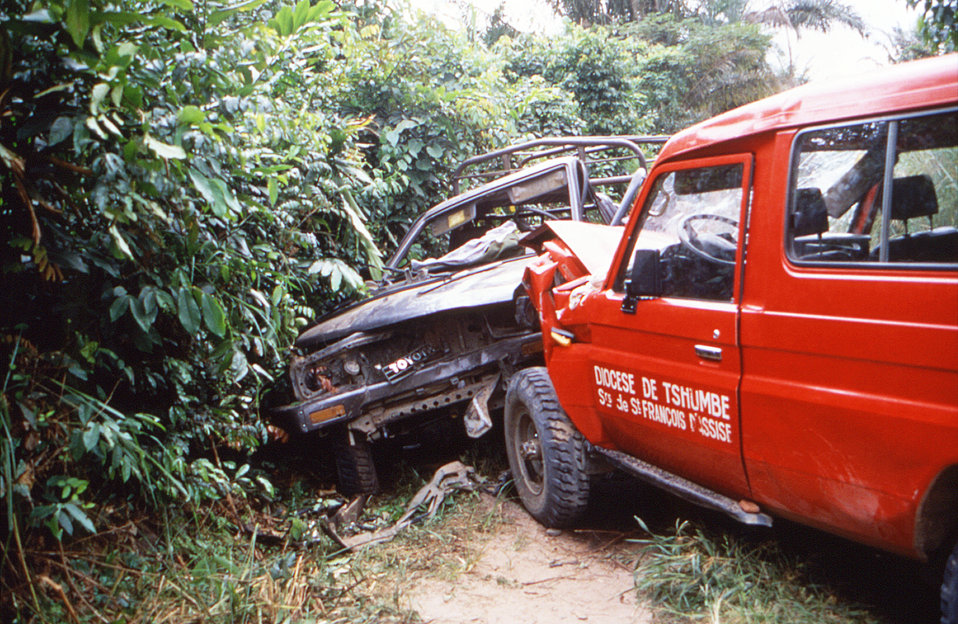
This image was created during an investigation into an outbreak of monkeypox, which took place in the Democratic Republic of the Congo (DRC), 1996 to 1997, formerly Zaire. Pictured here, in this motor vehicle accident, were two of the investigative team's rented vehicles, only 20 to 30 minutes after being on the 'road', or what was more akin, to an unpaved trail.